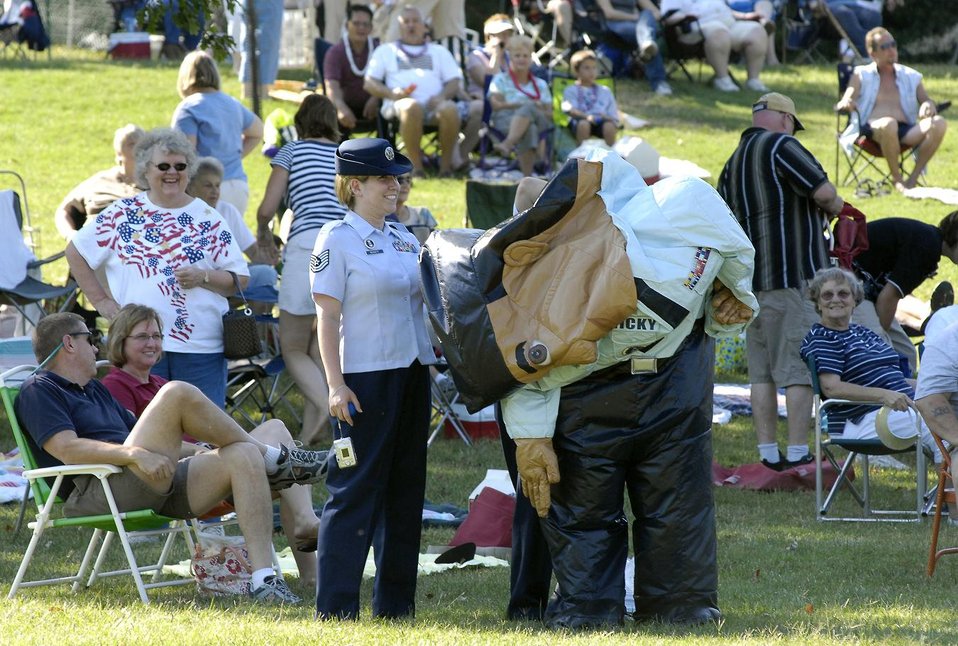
Air Force Week St. Louis

Tech Sgt. Tracy Bennett and spectators at the Jefferson Barrack Blast look on as Ricky the Recruiter deflates due to a temporary zipper malfunction. St. Louis County, in partnership with the Air Force during Air Force Week, put on the blast, entertaining the more than 20,000 in attendance. Ricky was re-inflated and continued his walk around the park, visiting with most everyone.